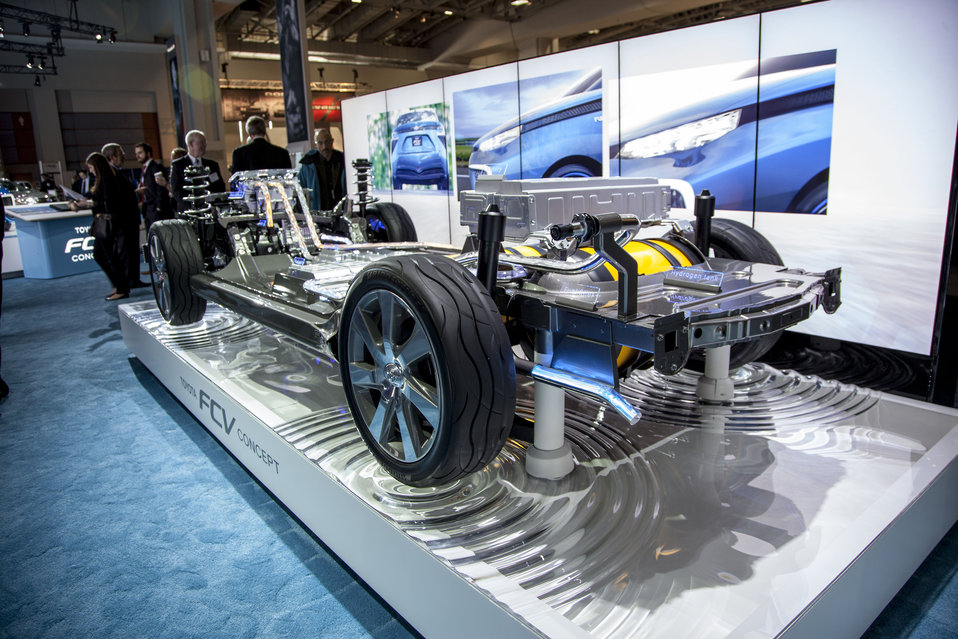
To help consumers understand how fuel cell vehicles work, Toyota displayed the chaissis and power systems of its fuel cell concept car. This display demonstrates how energy flows through a vehicle, from the hydrogen fuel tank (the yellow cylinders) in the back to the fuel cell in the middle and then to the power electronics before being transported to the electric motor at the front of the car. Because there is no combustion in a fuel cell, efficiencies can be twice as high as gasoline vehicles.